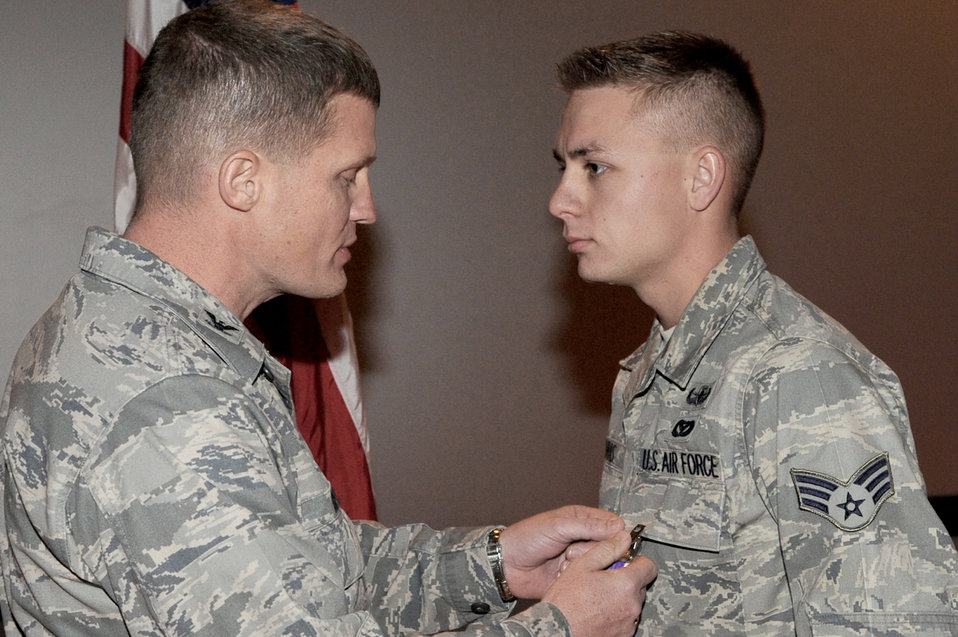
Nellis casualty

Retired Col. Dave Belote, the former 99th Air Base Wing commander, presents the Purple Heart to Senior Airman Michael Buras during a commander's call Dec. 4, 2009, at Nellis Air Force Base, Nev. Airman Buras died Sept. 21, 2010, of wounds incurred as the result of an improvised explosive device detonation in Kandahar, Afghanistan. Airman Buras was a 99th Civil Engineer Squadron explosive ordnance disposal journeyman.